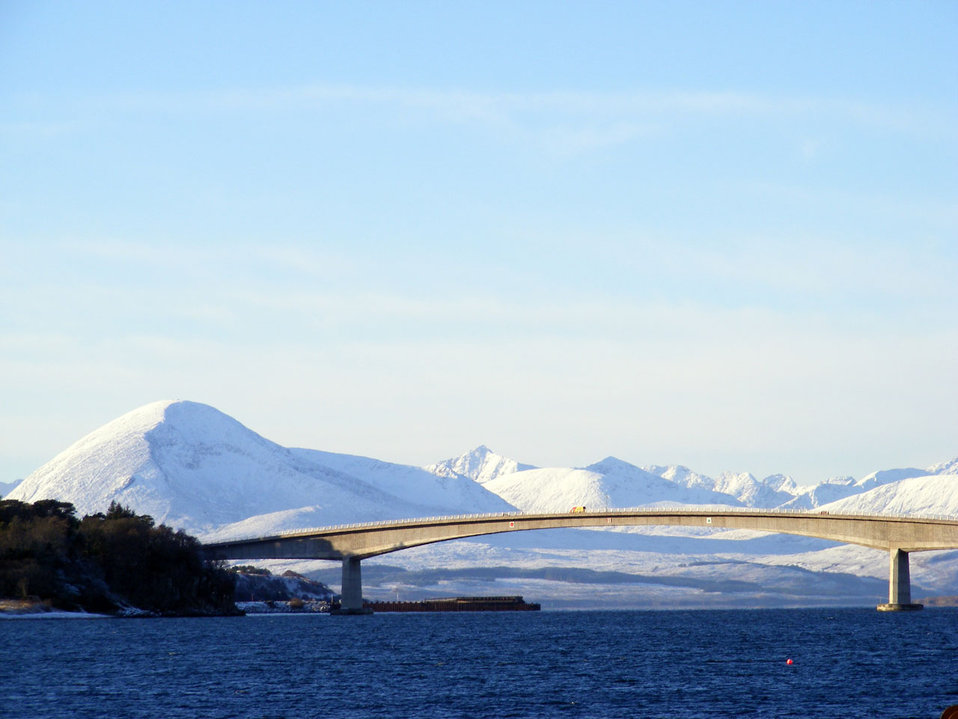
Skye bridge

The bridge to skye from kyle of lochalsh.